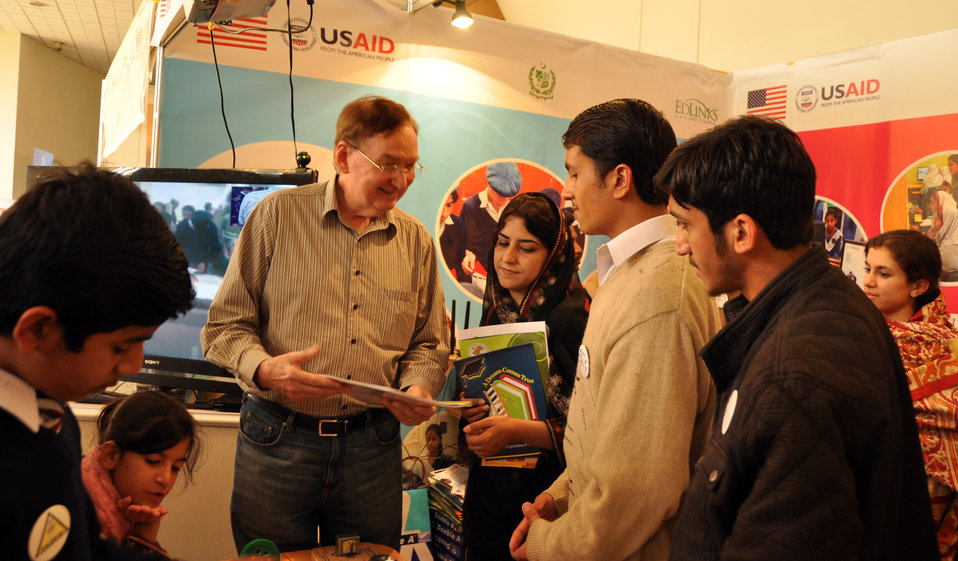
Pakistan Knowledge Festival

Islamabad, January 22, 2011 - USAID’s program office director, John Morgan, talking to students at the Pakistan Knowledge Festival about the U.S. support to Pakistan’s Education Sector. USAID’s $75 million Pre-STEP project is working to improve the basic education in Pakistan by strengthening teacher training.